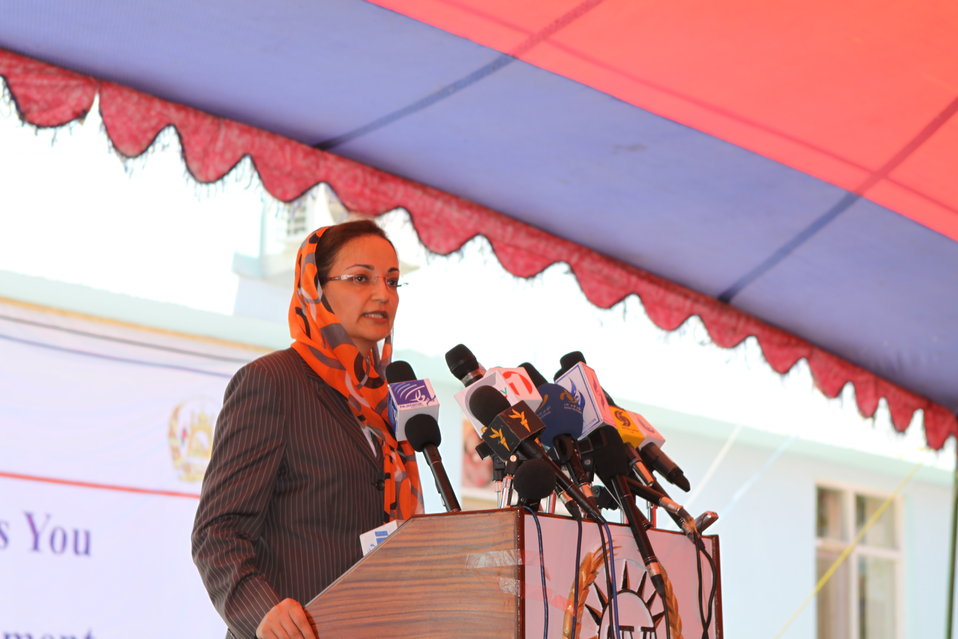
100522 ATVI Graduation 089